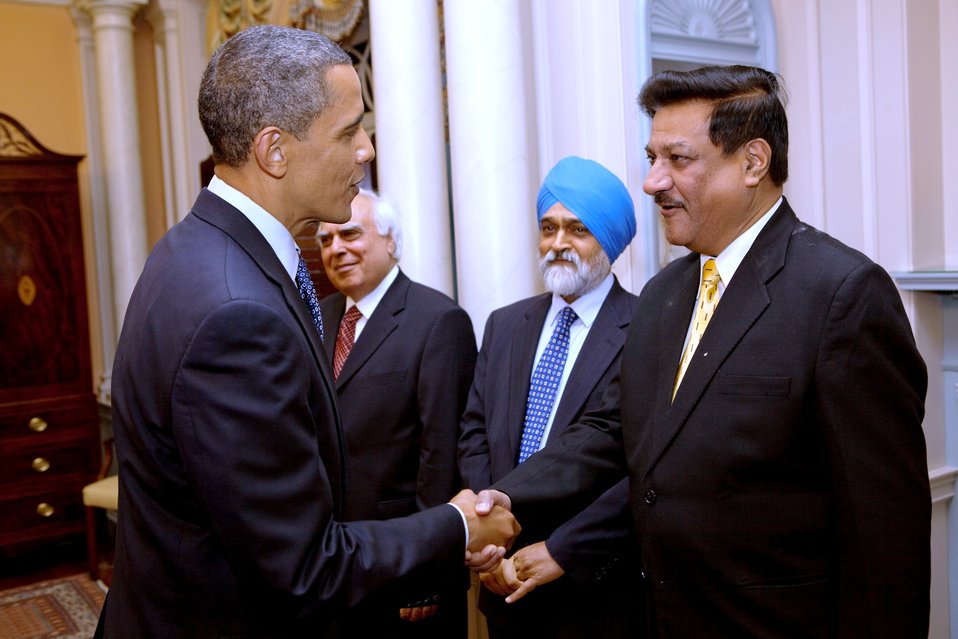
President Obama Shakes Hands With High-Ranking Indian Delegation Member

U.S. President Barack Obama shakes hands with a high-ranking member of the Indian Delegation at the U.S.-India Strategic Dialogue reception at the U.S. Department of State in Washington, D.C., on June 3, 2010.